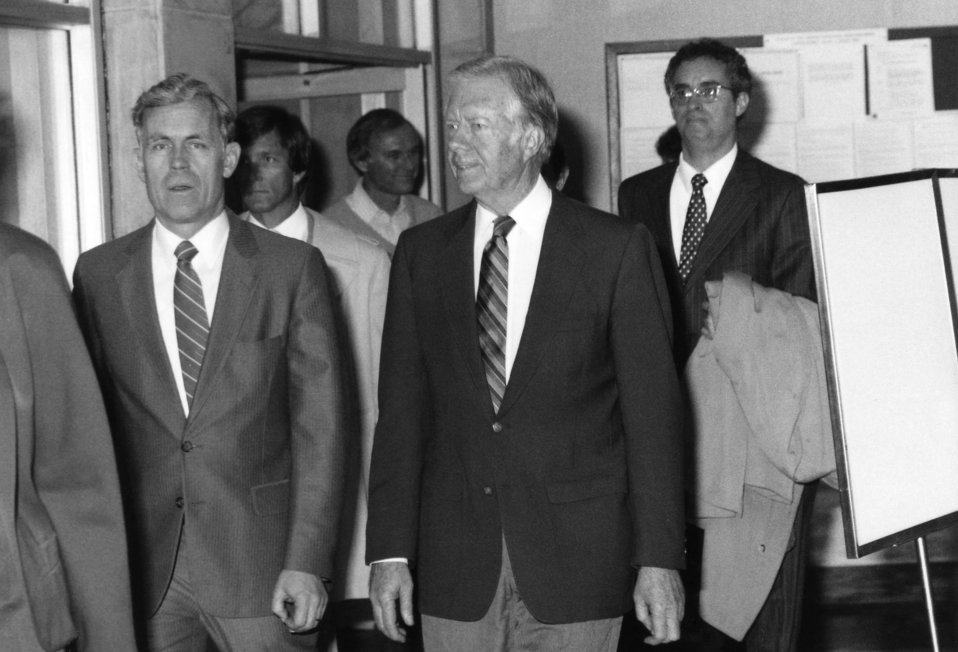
Former United States President Jimmy Carter (center), is shown here touring the Centers for Disease Control in 1984 along side then CDC Director Dr. James O. Mason (left).